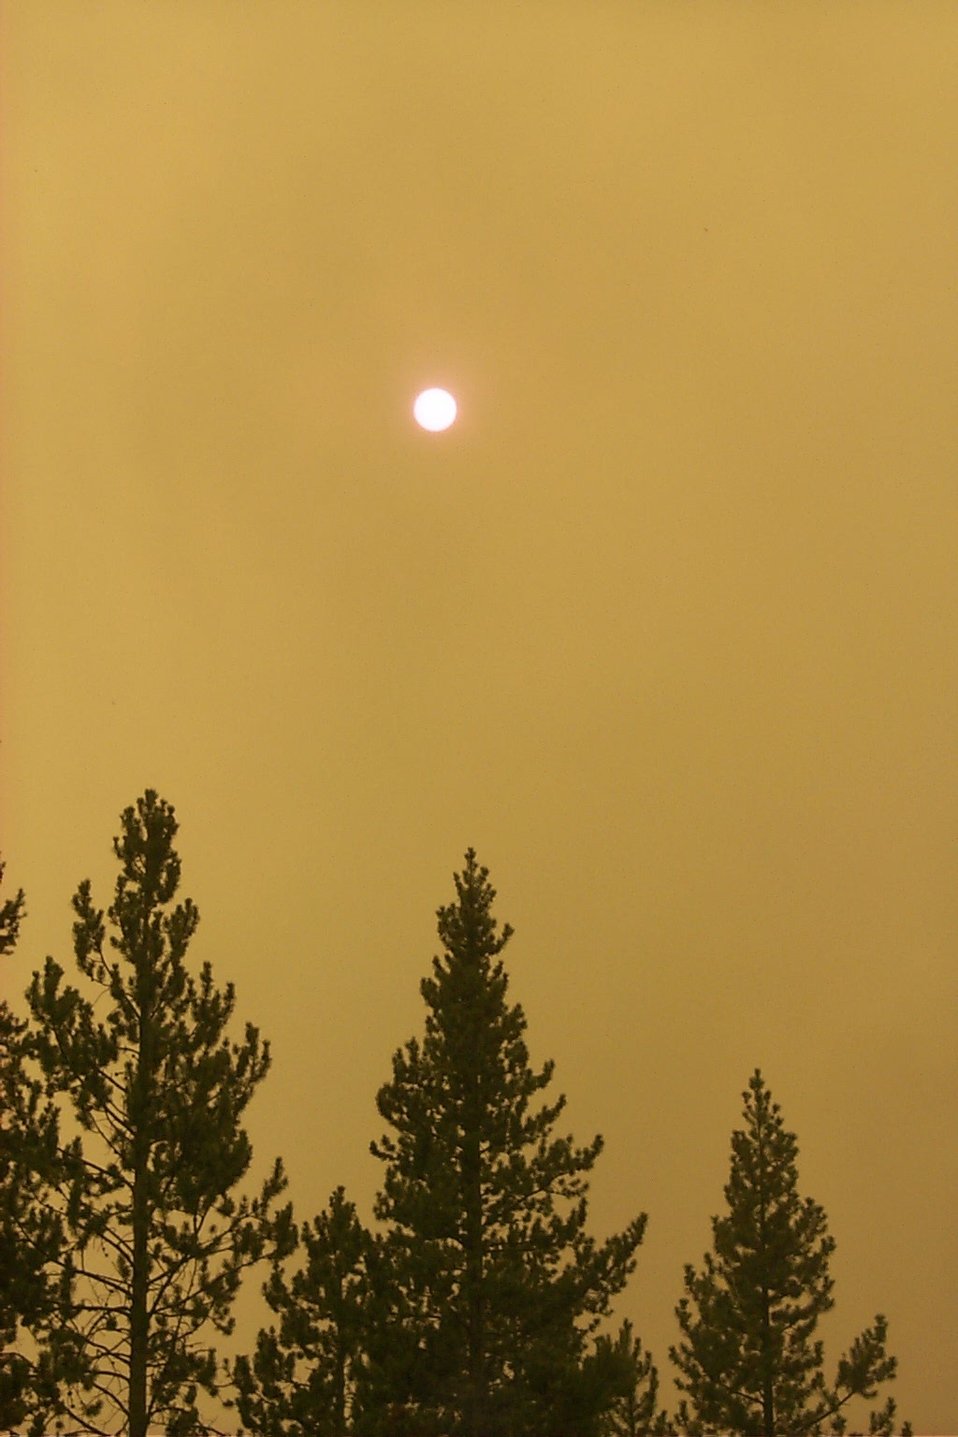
Smoke Clearwater Fire Salmon Field Office USRD Upper Snake River District